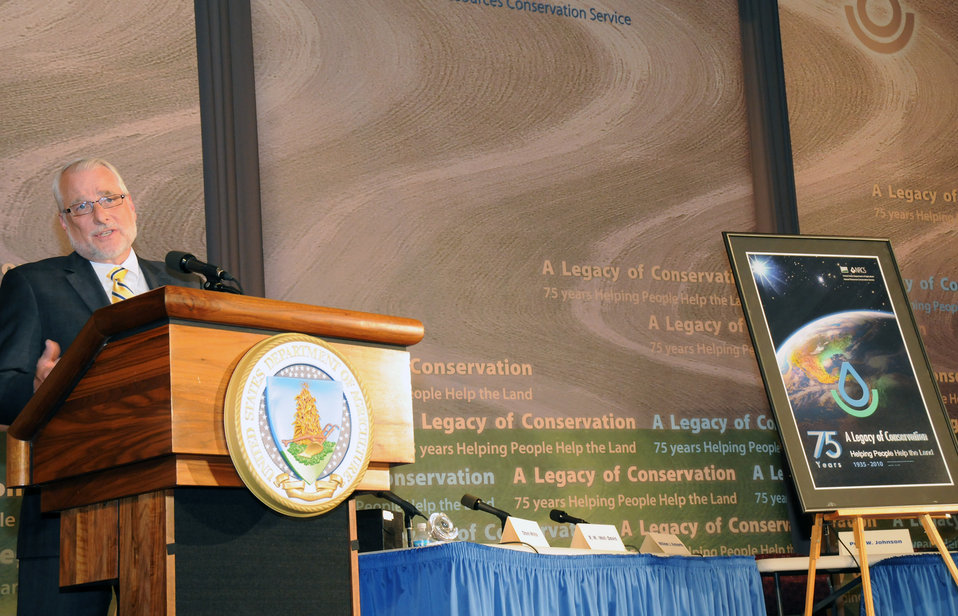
Natural Resource Conservation Service (NRCS) Chief Dave White makes closing remarks at the conclusion of NRCS 75th Anniversary celebration held at the Jefferson Auditorium, U. S. Department of Agriculture in Washington, D. C., on Tuesday, April 27, 2010. The new poster celebrating NRCS’s seventy-five years of service is to the right of Chief White. USDA photo 10di1330-135